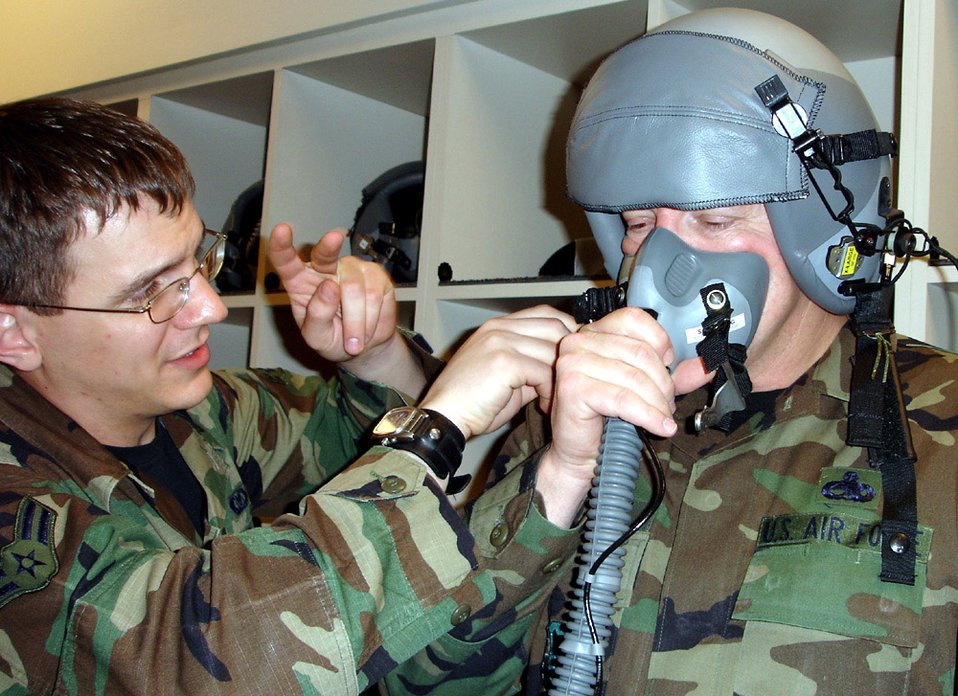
chief visits Hulbert field

Airman 1st Class Mathew Shultz, 16th Special Operations Squadron, fits Chief Master Sgt. of the Air Force Rodney J. McKinley with life support gear prior to his orientation flight at Hurlburt Field March 5.